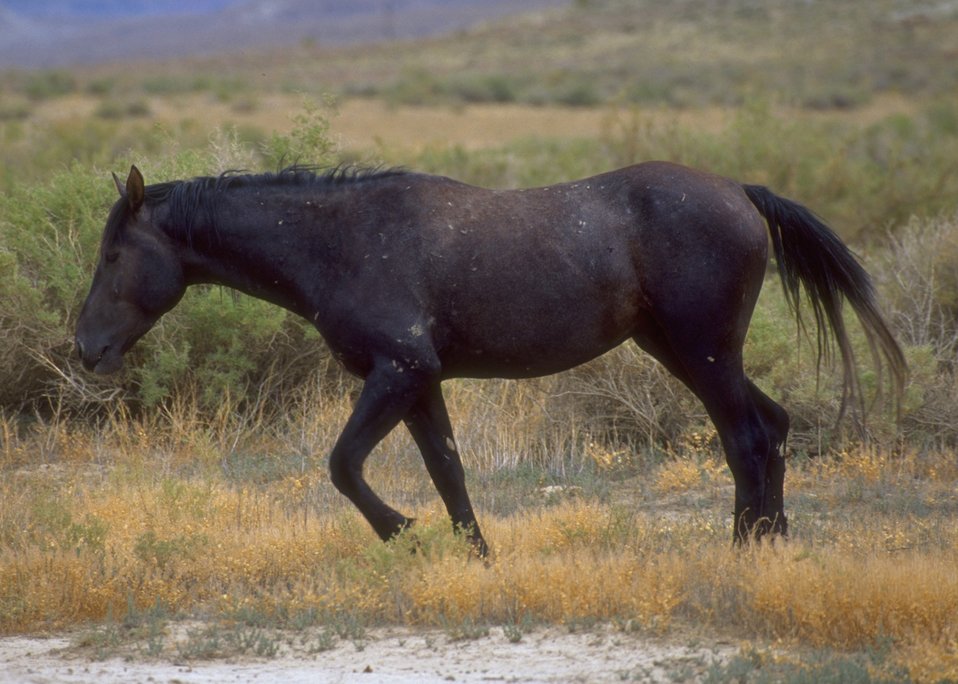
Wild horses, Rock Springs Field Office.